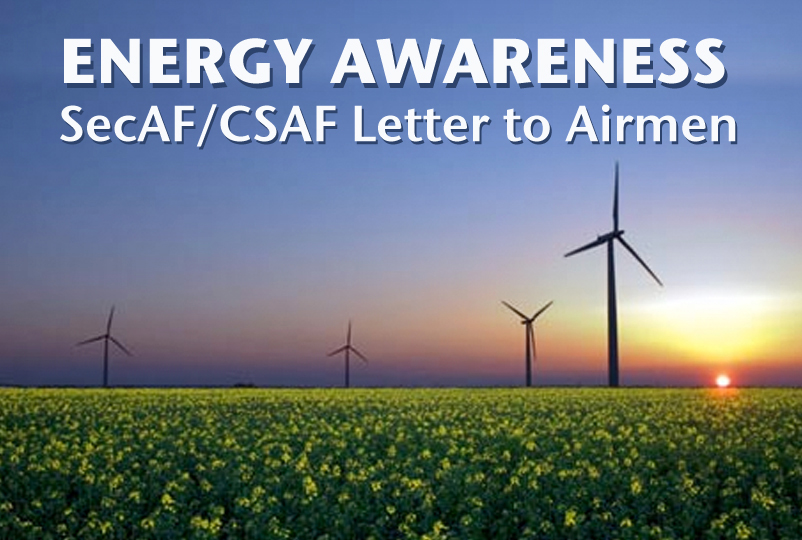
Leaders issue energy message